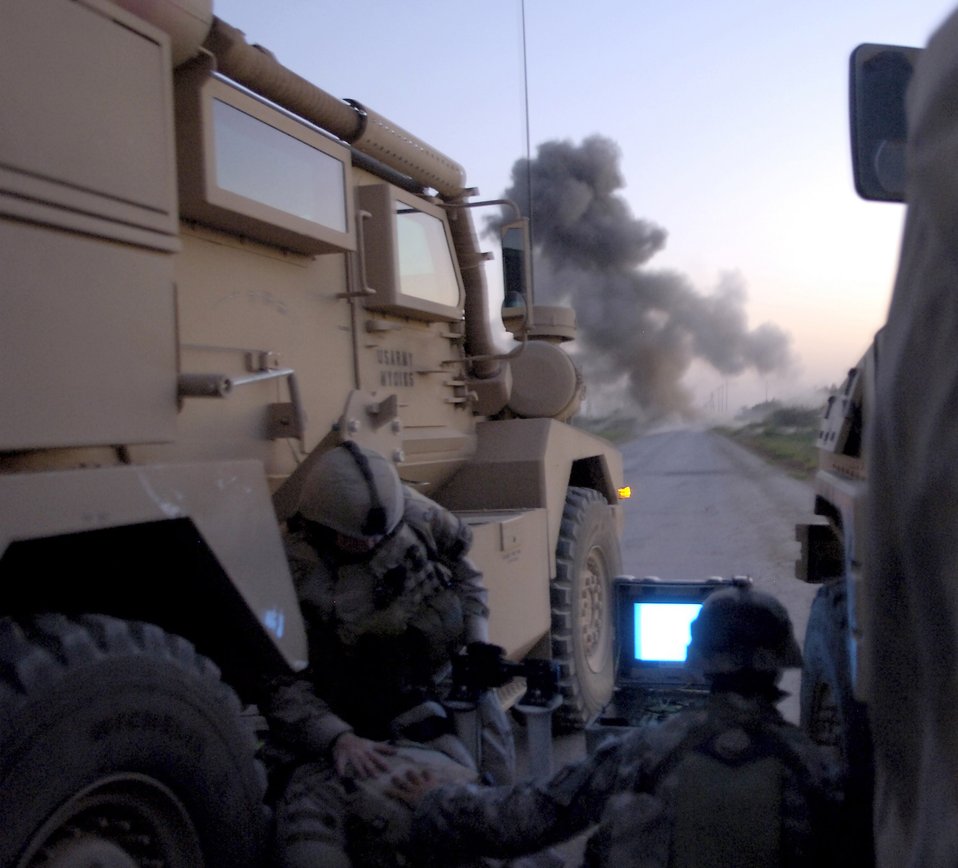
Remote control

Servicemembers seek cover as an improvised explosive device, or IED, detonates at a location southwest of Baghdad, Iraq, on Wednesday, June 28. There were no injuries. Explosive ordnance disposal technicians were called to the scene when an Army infantry unit discovered a wire protruding from a mound in the middle of a road. The IED detonated while explosive ordnance disposal technicians were inspecting the mound with their remote-controlled Talon robot.